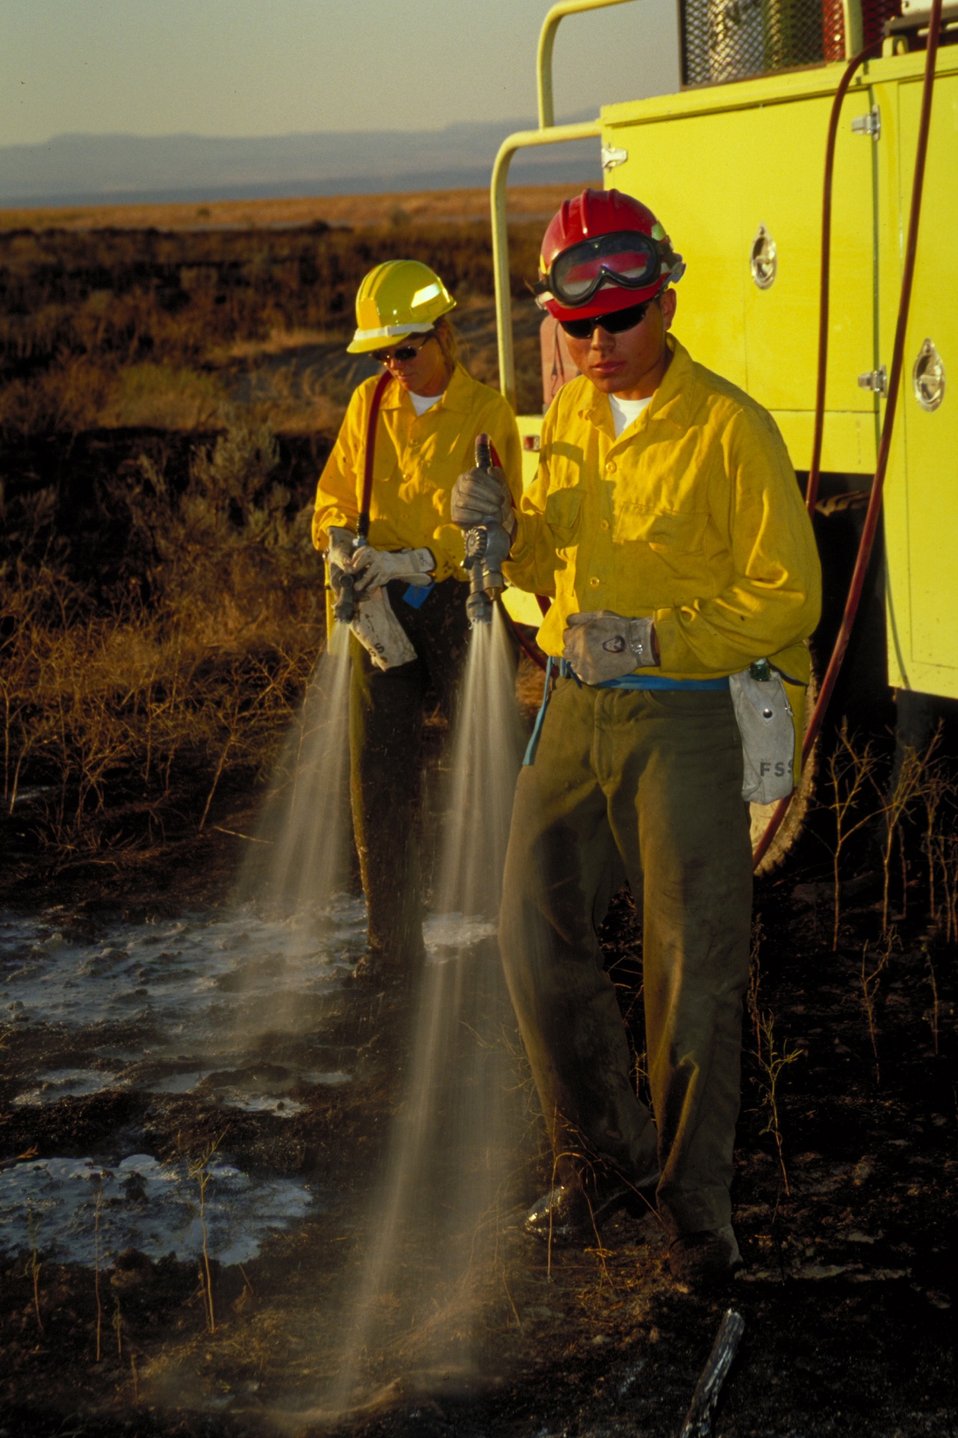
Retardant measure Wildland Fire Fighters Fire Season 2000 Lower Snake River District LSRD